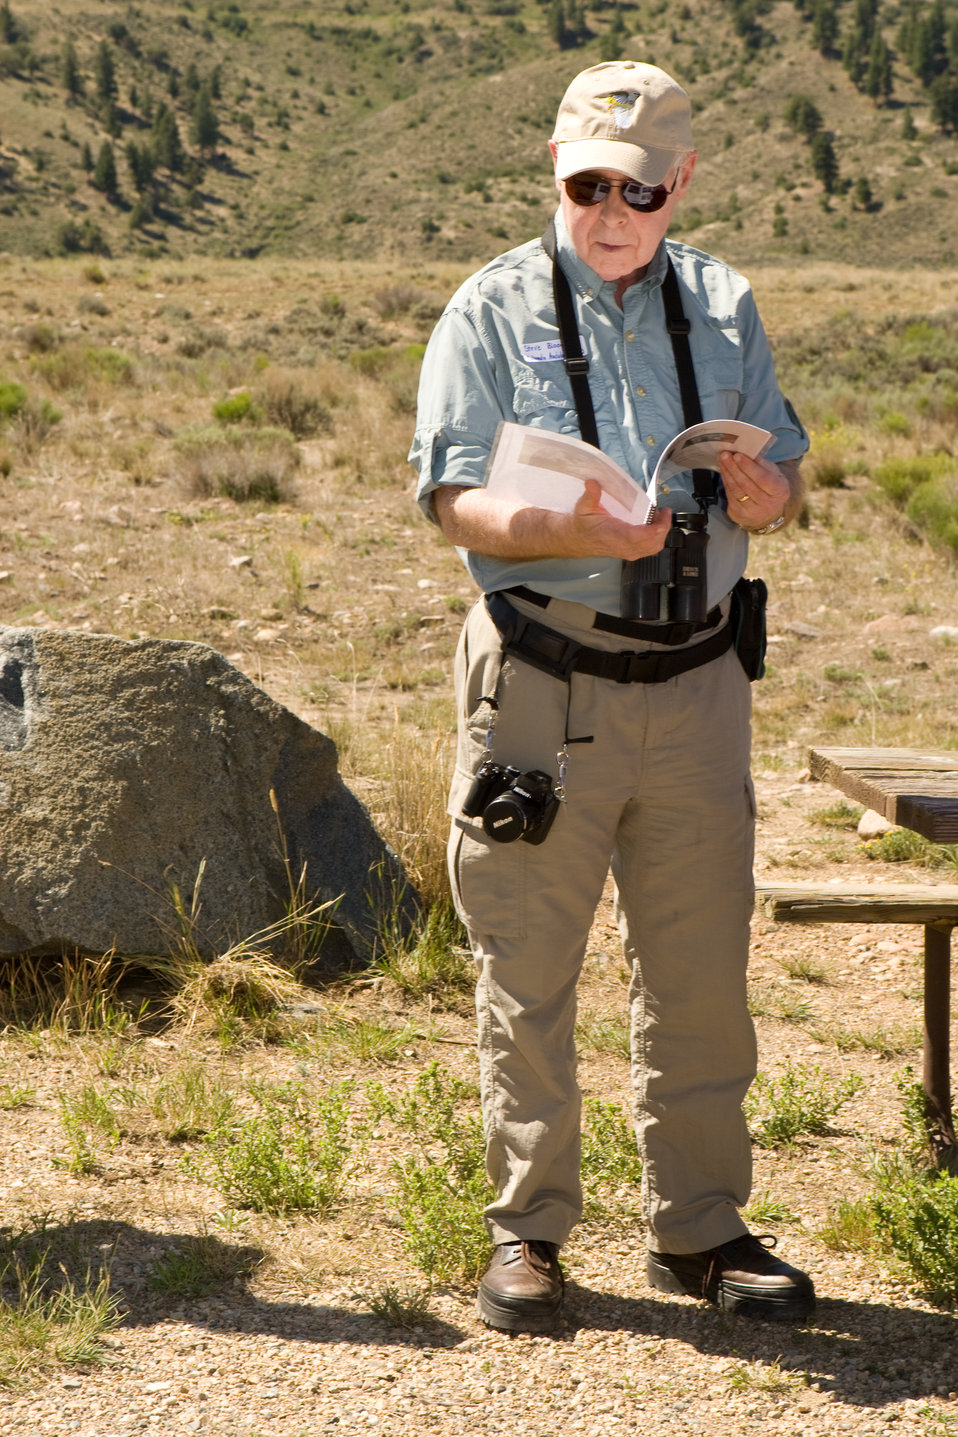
Colorado Rare Plant Conservation Initiative

The Colorado Rare Plant Conservation Initiative (RPCI) is a partnership of 23 statewide and regional agencies, private organizations, and academic institutions working to conserve 121 rare plants in Colorado. As part of these efforts the group developed the Colorado Rare Plant Conservation Strategy, developed Best Management Practices to reduce energy development impacts, addressed climate change, and developed focused strategies for the conservation of individual species at eight priority landscapes. The group has also worked to coordinate volunteer efforts for plant conservation across the state.